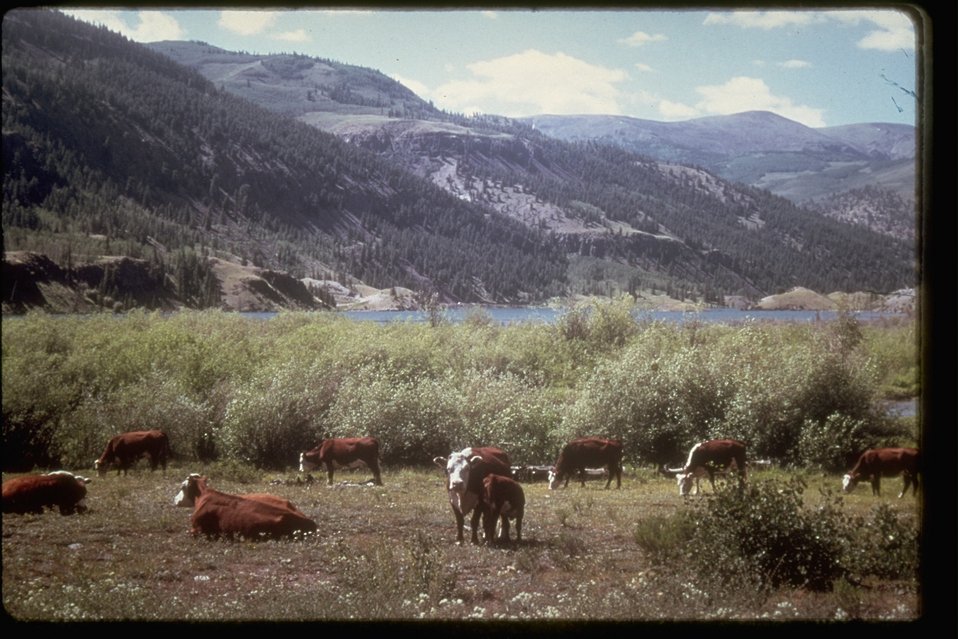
Cattle grazing next to reservoir.